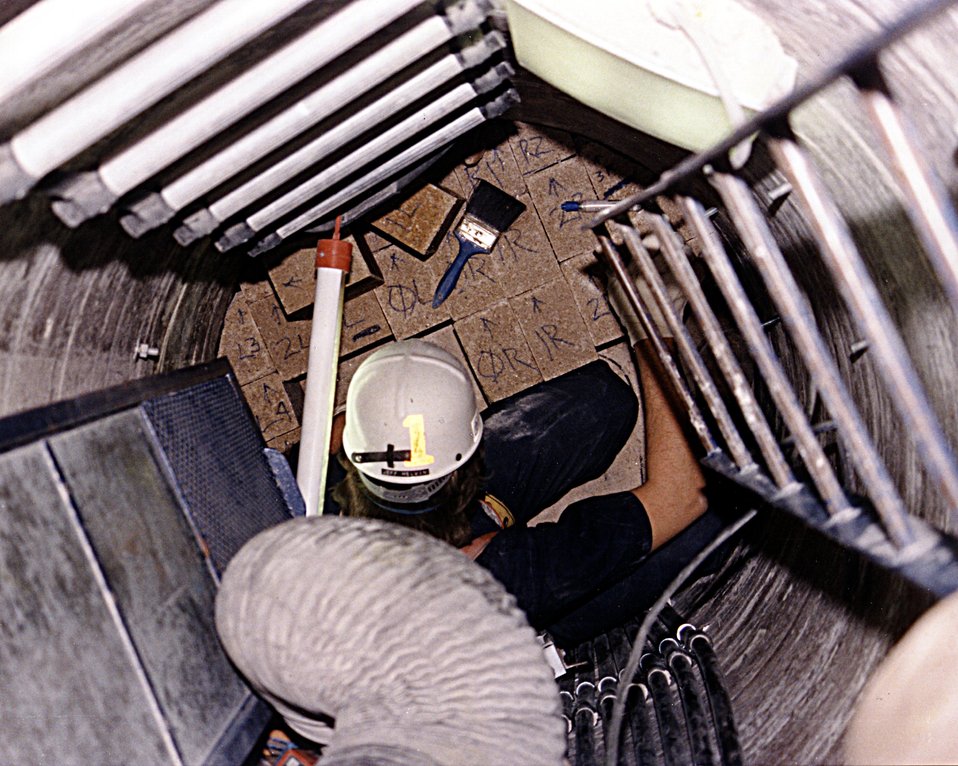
STUDYING A SMALL SCALE SEAL BEING DEVELOPED FOR SEALING WASTE UNDERGROUND.

WIPP EXPERIMENTAL OPERATIONS IS BUILDING A SMALL SCALE SEAL THAT WILL GIVE SCIENTISTS DATA ON SEAL PERFORMANCE TO BE USED TO SEAL DISPOSAL AREAS IN THE UNDERGROUND FROM THE BIOSHPERE. THE WASTE ISOLATION PILOT PLANT, LOCATED IN SOUTHEASTERN NEW MEXICO, IS A DOE RESEARCH AND DEVELOPMENT FACILITY DESIGNED TO DEMONSTRATE THE SAFE DISPOSAL OF DEFENSE RADIOACTIVE WASTE IN ANCIENT SALT BEDS.